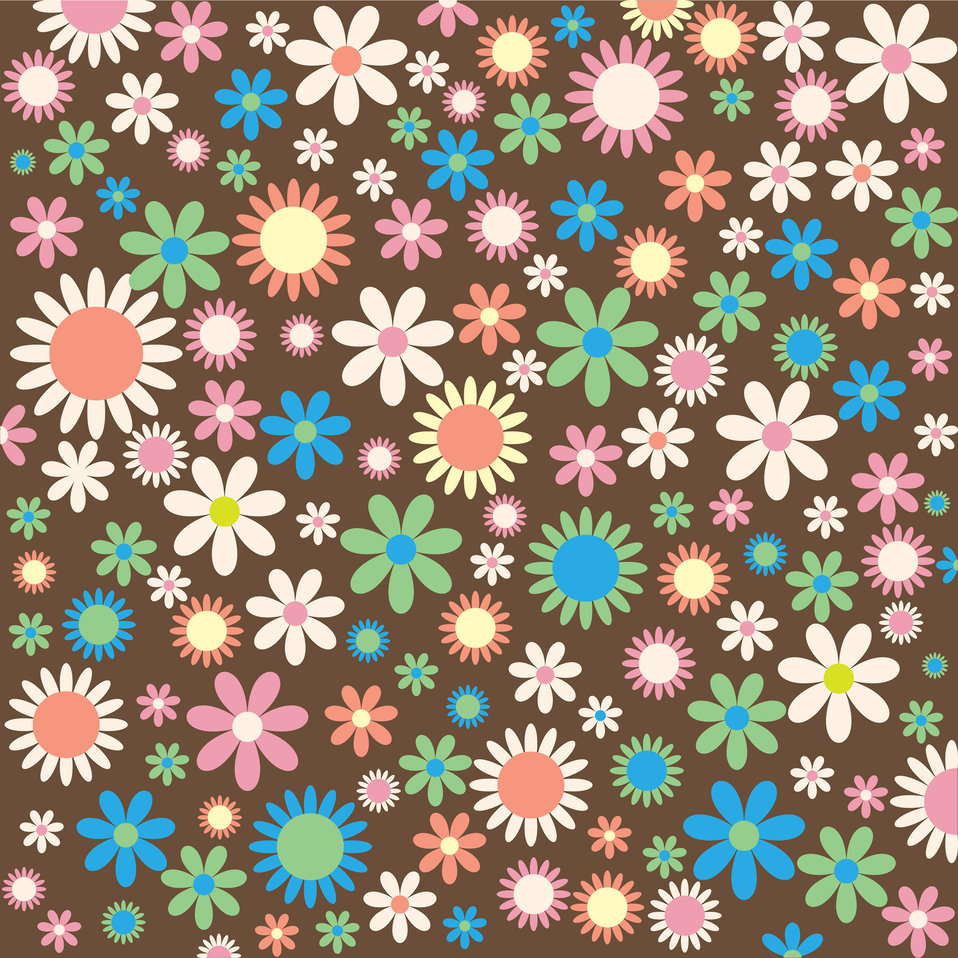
Floral flowers background

Funky, retro floral flowers background wallpaper.